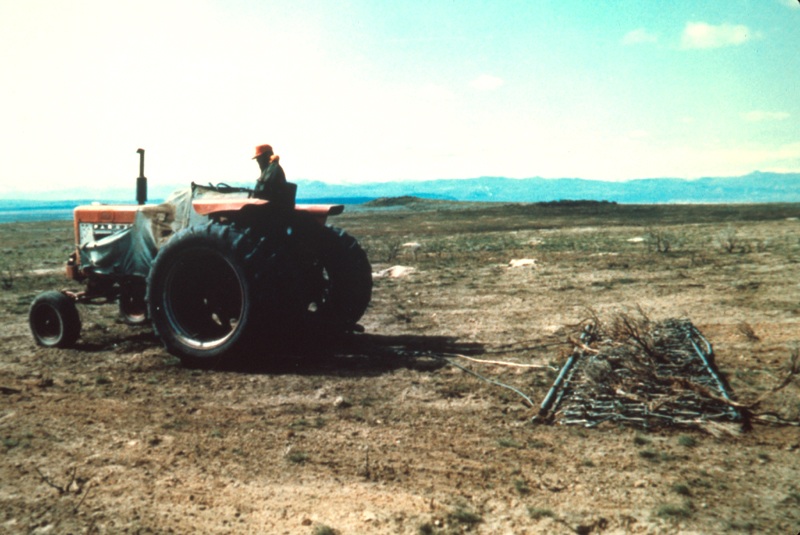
Range Restoration Project Lower Snake River District